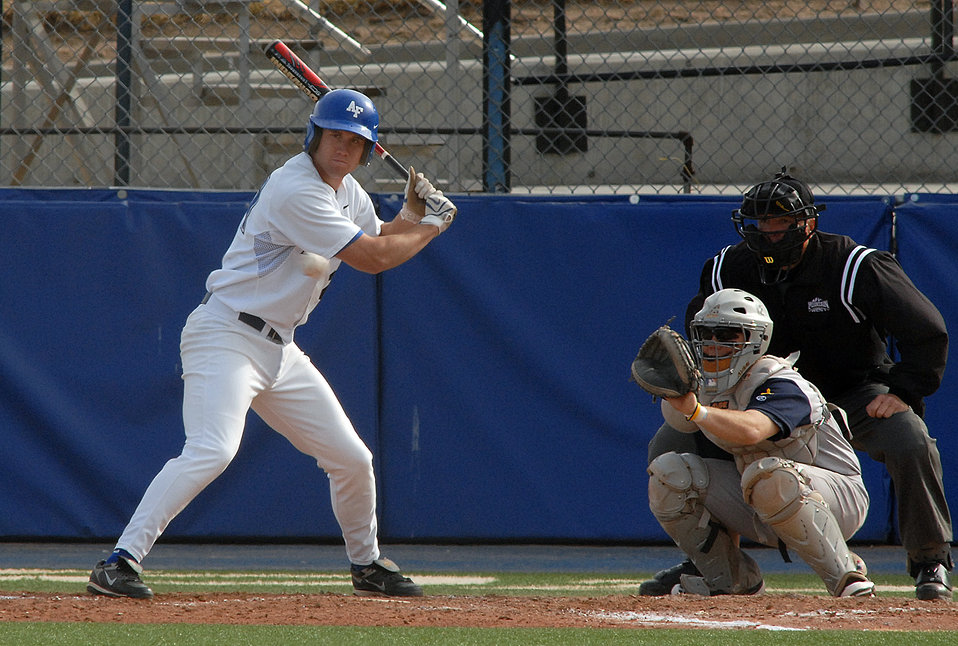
Air Force Rallies To 10th Inning Win Over Colorado Christian

Sophomore designated hitter Matt Alexander takes a called ball as the Falcons rallied to a 10th inning 9-8 win against Colorado Christian in non conference baseball action at the Academy's Falcon Field. Air Force tallied 12 hits and did not commit an error in the field on the day. The Falcons improve to 11-19 on the season.